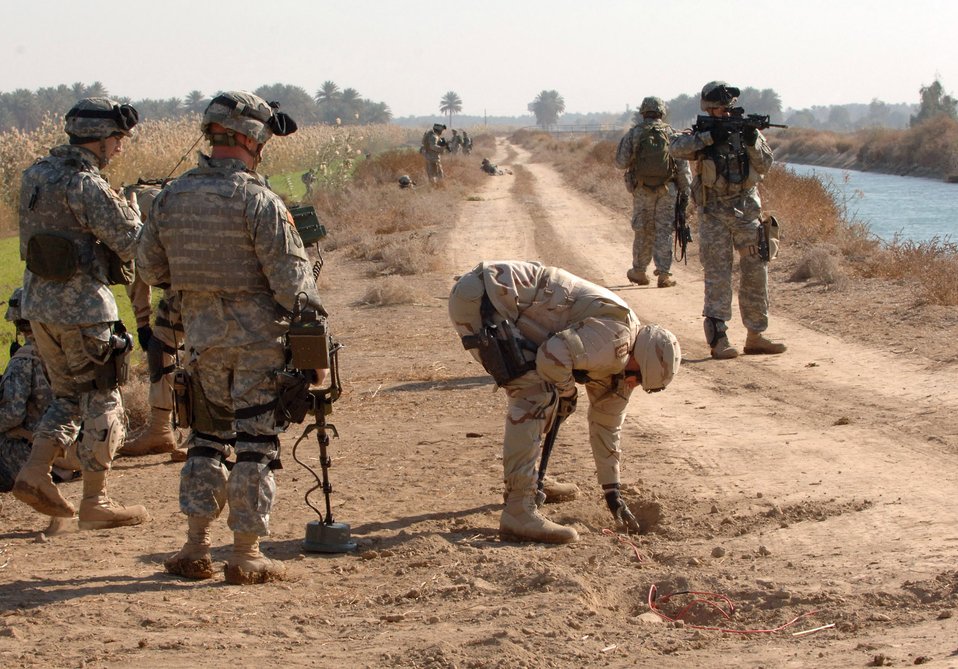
Road search

SHAKARIA, Iraq -- Capt. Joshua Tyler, center, and Tech. Sgt. Brian Schilhabel, left, secure an improvised explosive device. Soldiers from Bravo Company, 2nd Battalion, 502nd Infantry Regiment conducted the search. Captain Tyler and Sergeant Schilhabel are with the 447th Expeditionary Civil Engineer Squadron.